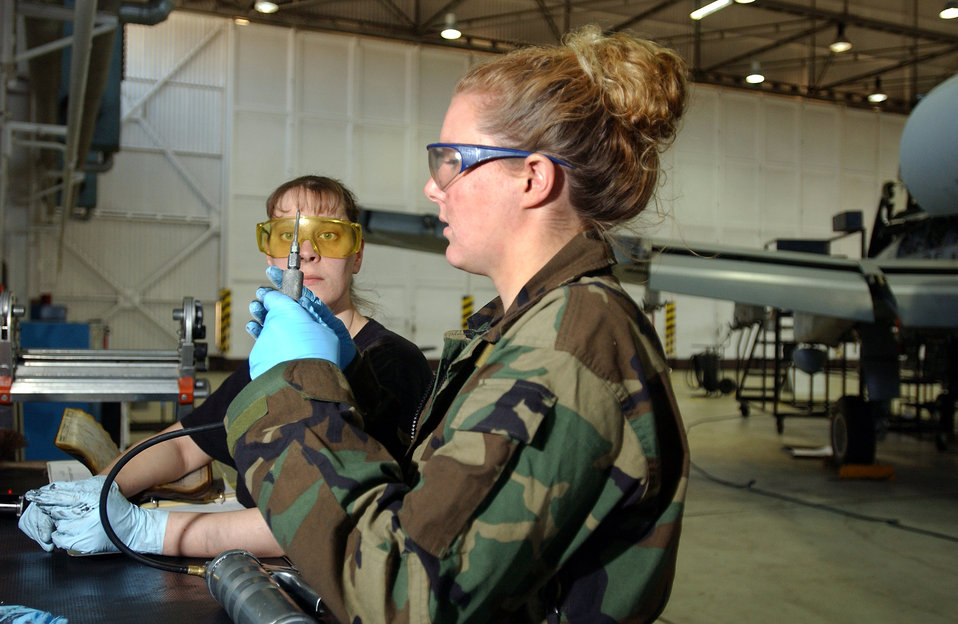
Inspections

SPANGDAHLEM AIR BASE, Germany-- Airmen 1st Class Jennifer Brocious (foreground) and Deborah Overly inspect the tip of a lubrication gun March 3. Airmen Brocious and Overly are A-10 Warthog crew chiefs for the 52d Equipment Maintenance Squadron and 81st Aircraft Maintenance Unit respectively.